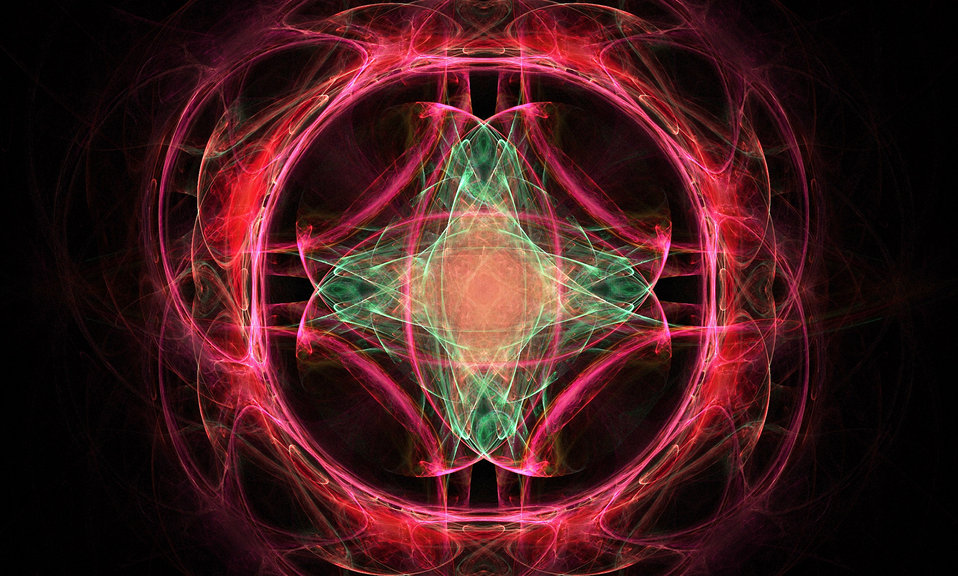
Colourful fractal

Fractal in red and other colours.